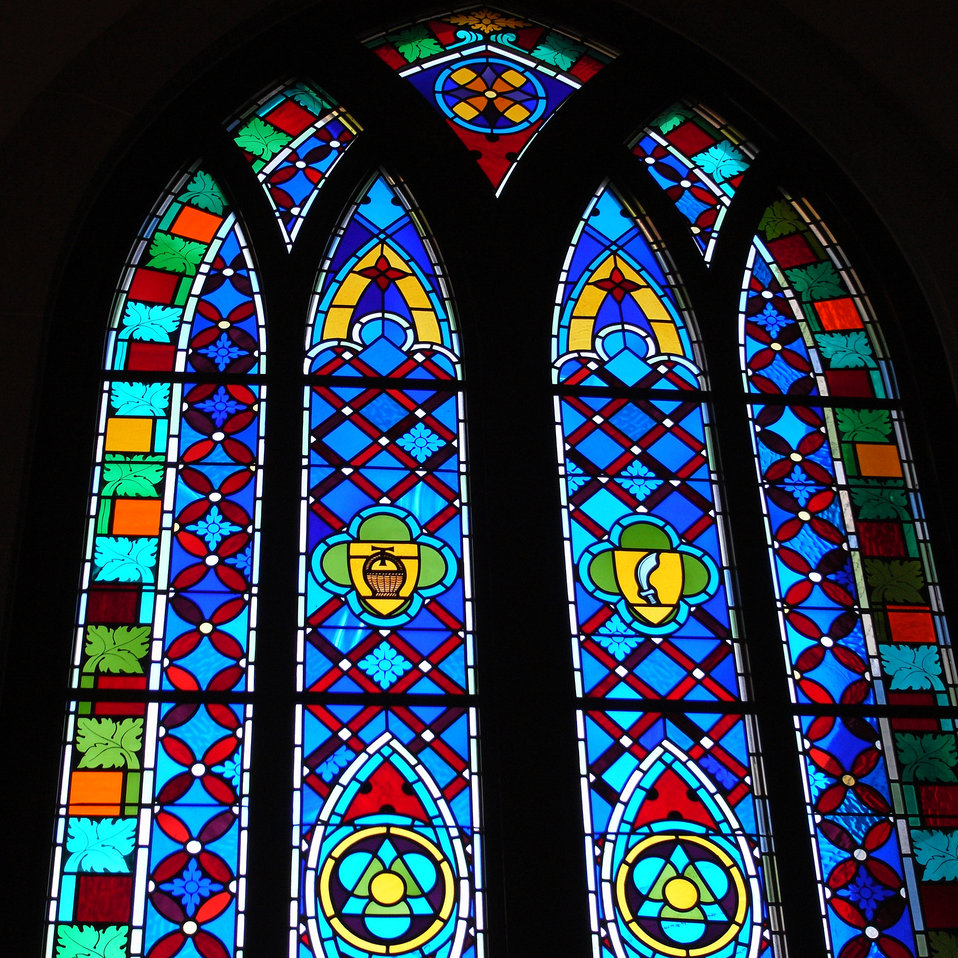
Stained glass of the church.